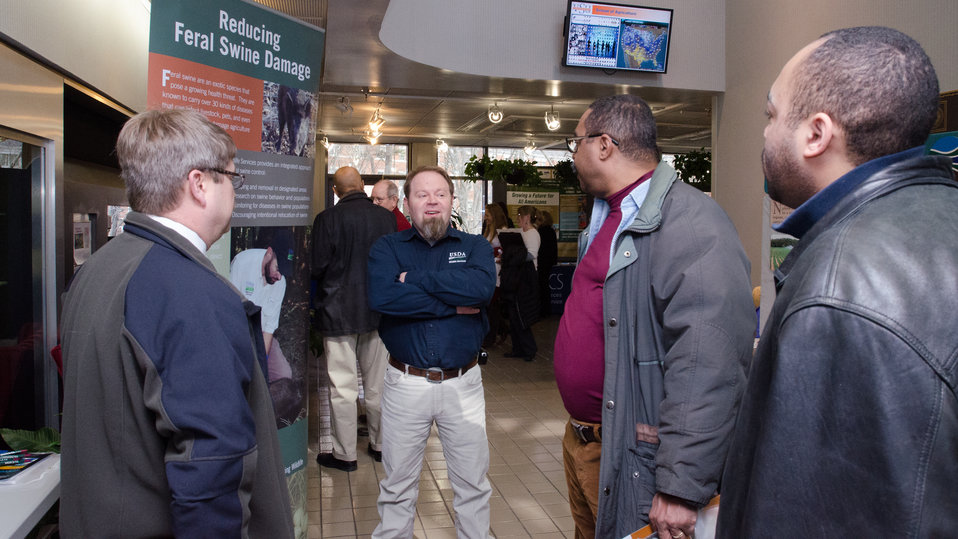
U.S. Department of Agriculture (USDA) Animal and Plant Health Inspection Service Wildlife Services wildlife biologist Jeffrey Rumbaugh, center, talks with farmers participating in the “Virginia State University (VSU), USDA and Virginia Farmers Working Together” outreach workshop in the VSU, L. Douglas Wilder building on Thursday, Mar. 7, 2013, in Petersburg, VA. Farmers shared and learned new ways to do more with USDA services, and how to apply for programs that will help grow their business.